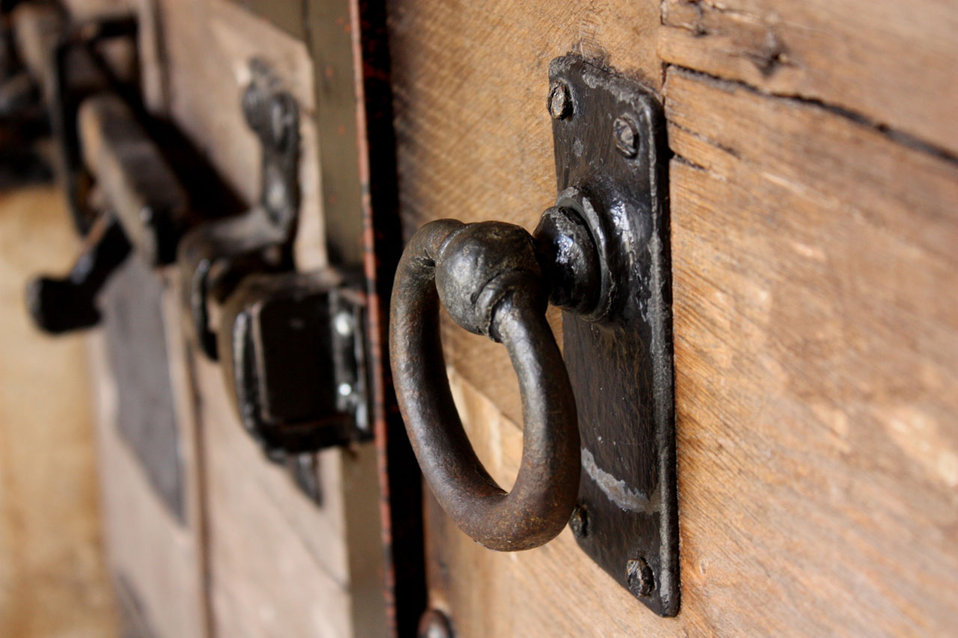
Door

Big wooden door.